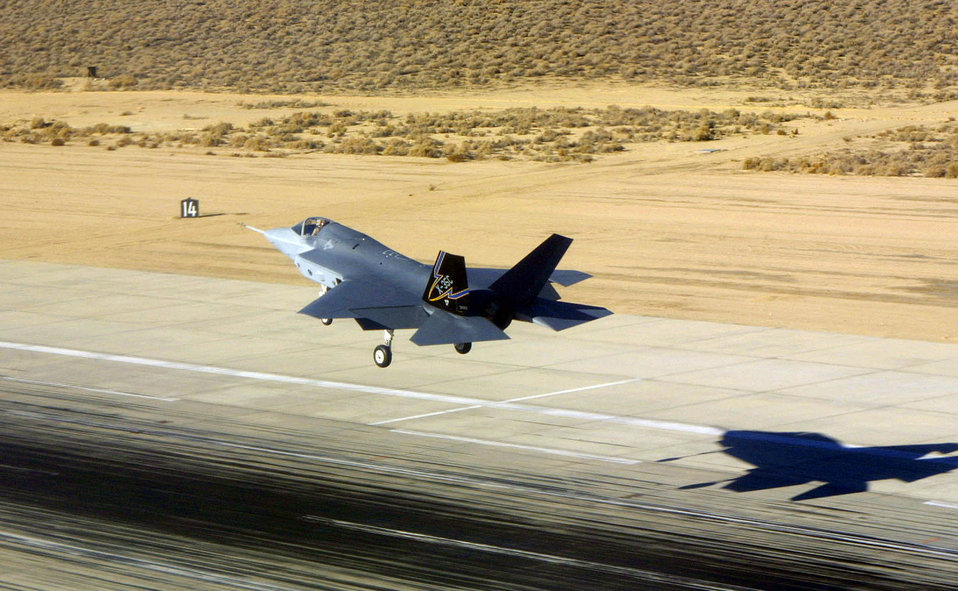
X-35C Joint Strike Fighter

Lockheed Martin's X-35C Joint Strike Fighter touches down at Edwards Air Force Base, Calif., Dec. 18, 2000, after its first flight. The carrier variant JSF will be tested at Edwards and Naval Air Station Patuxent River, Md.